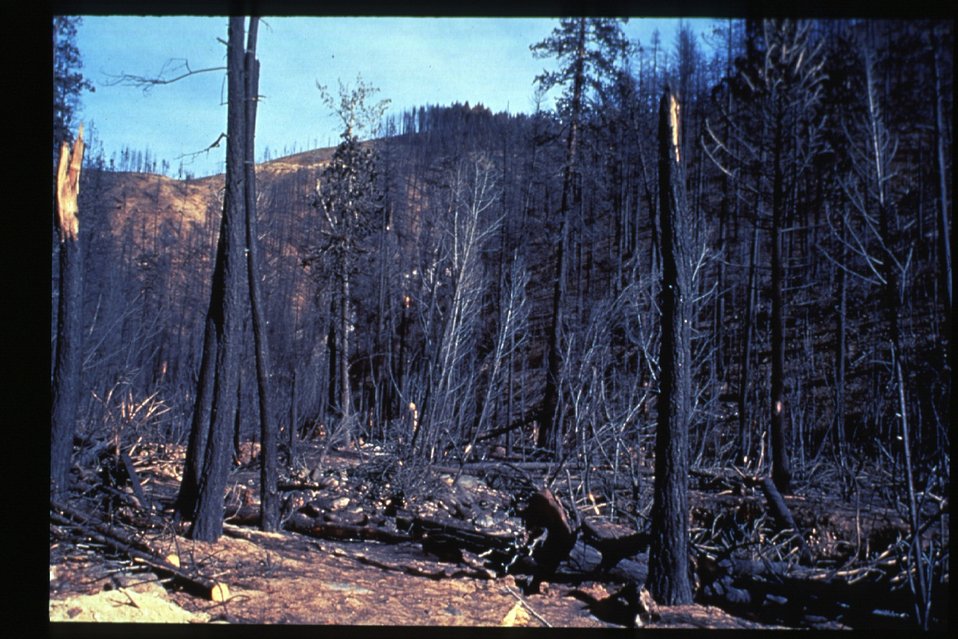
Boise Foothills Fire Danskin Mountains and South Fork of Boise River Burnt area Four River Field Office LSRD Lower Snake River District